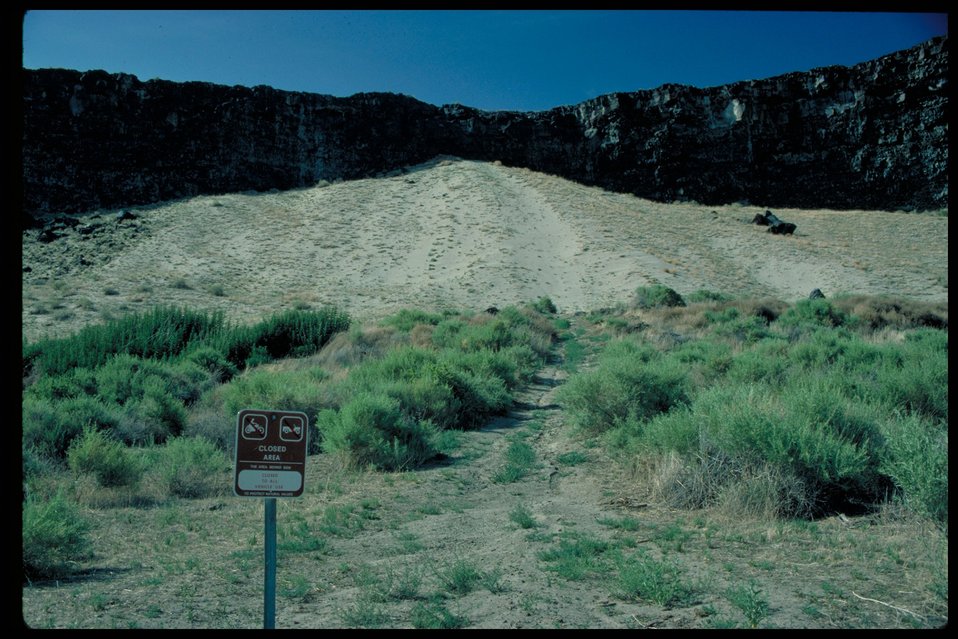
OHV Closure Birds of Prey National Conservation Area BOP Owyhee Field Office LSRD Lower Snake River District